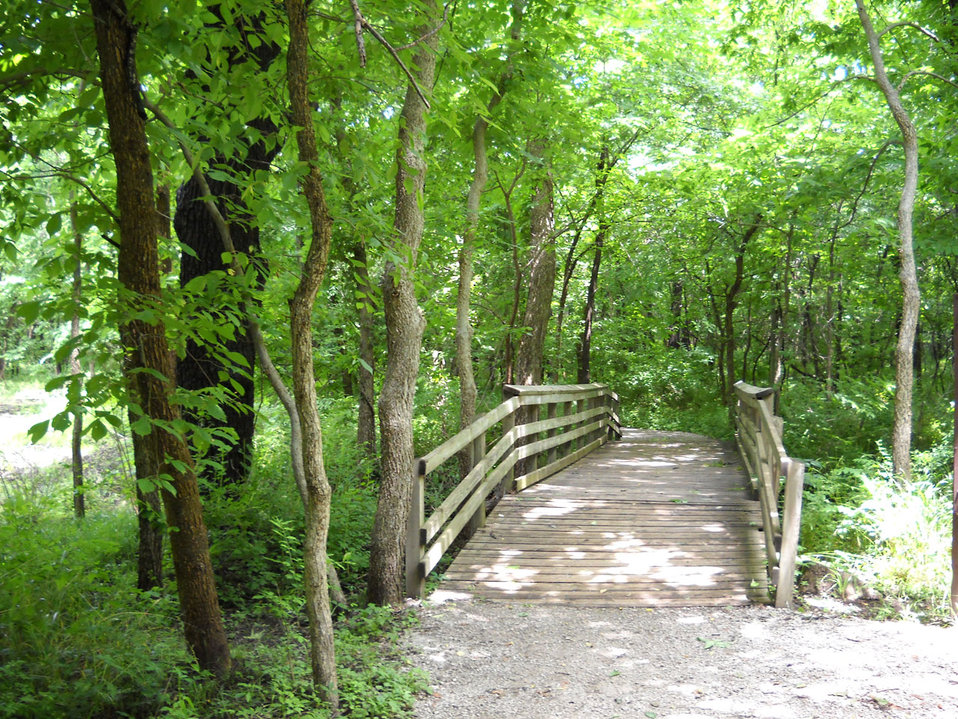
The bridge

A bridge crossing a stream..